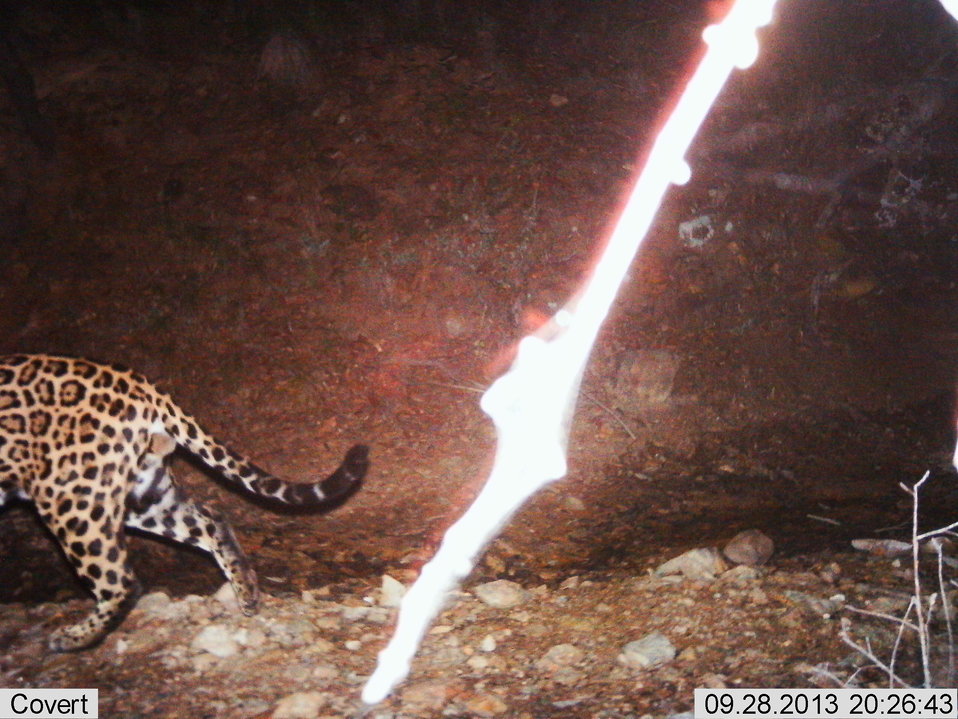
Male jaguar photographed by automatic wildlife cameras in the Santa Rita Mountains on September 28, 2013, as part of a U.S. Fish and Wildlife Service/Department of Homeland Securityfunded jaguar survey conducted by University of Arizona. The jaguar has been photographed previously from this location.